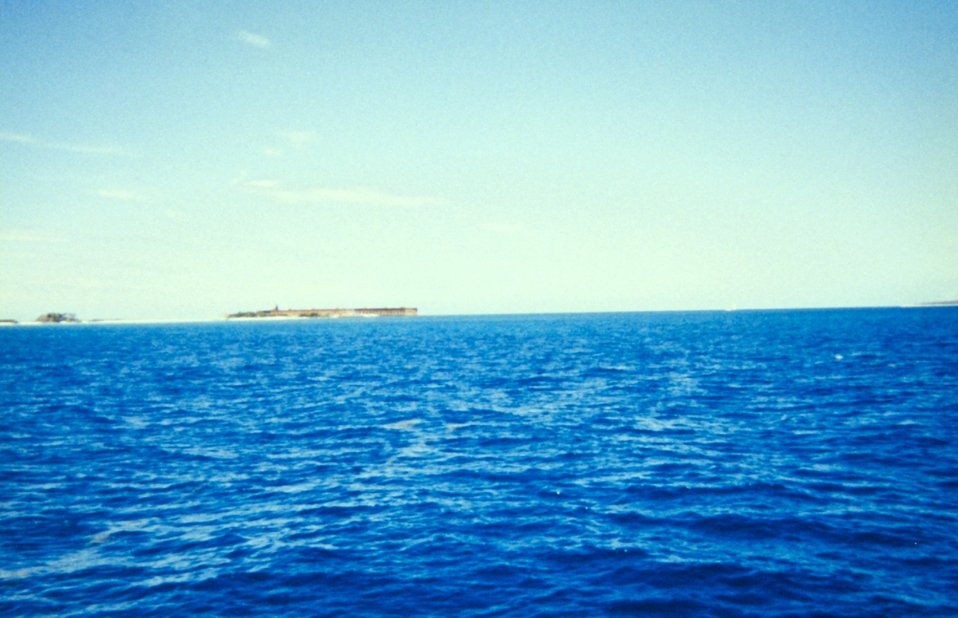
Approaching Fort Jefferson from the east.